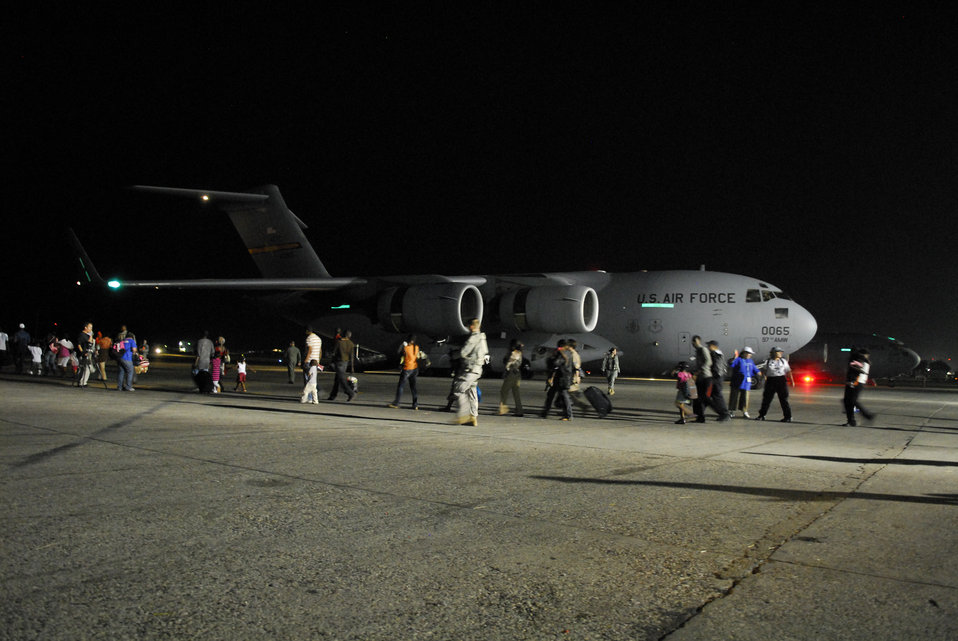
AMC provides airlift for Americans in Haiti

American citizens, escorted by Air Force personnel and international aid workers, walk across the flightline to a C-17 Globemaster III at the Toussaint L'Ouverture International Airport in Port-au-Prince, Haiti, Jan. 19, 2010.